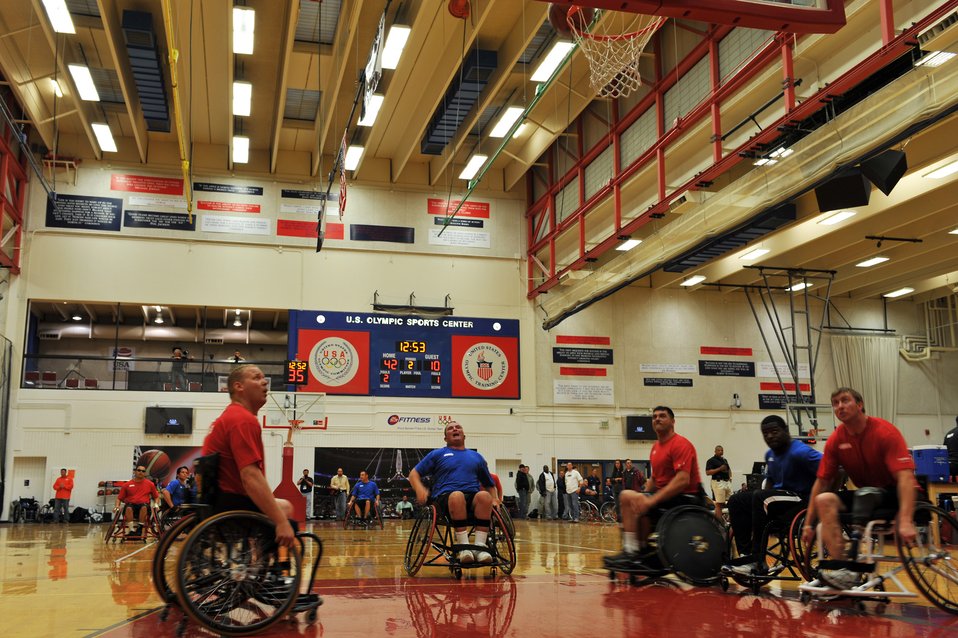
Warrior Games Team Air Force Basketball

Staff Sgt. Richard Pollock II shoots a free throw during a wheelchair basketball game against the Marines May 11, 2010, during the Warrior Games held at the Olympic Training Center, Colorado Springs, Colo. The Air Force team lost 68-13. Warrior Games competition began May 10 and finishes on May 14.